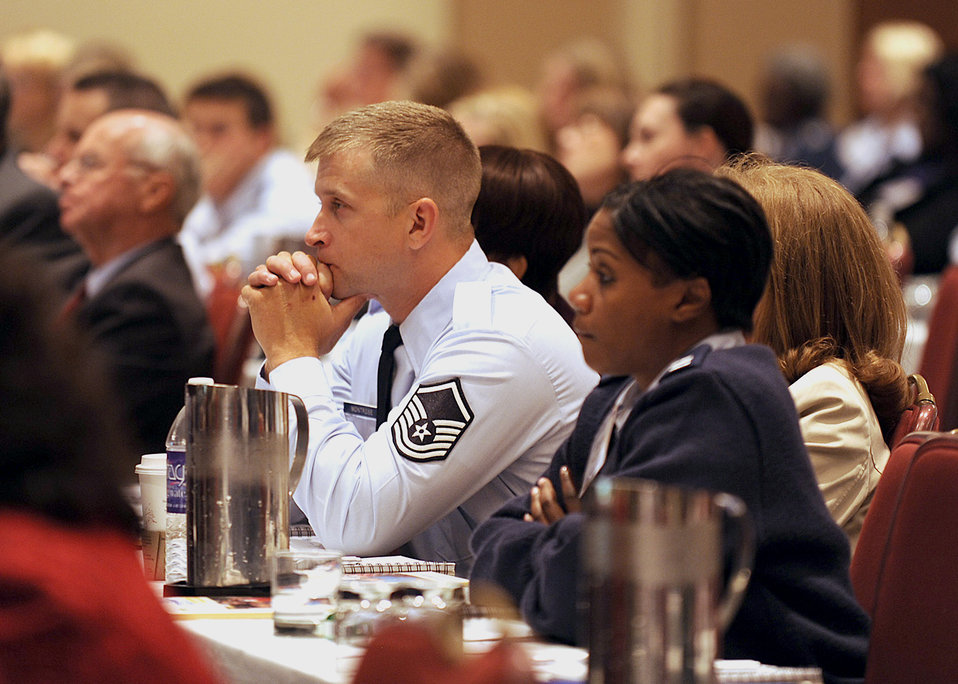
Caring for People forum

The second annual Caring for People Forum was held April 19-21 in Washington D.C. Attendees from around the Air Force participated in the conference designed to address quality of service issues for Airmen. Guest speakers included Secretary of the Air Force Michael Donley, Air Force Chief of Staff Gen. Norton Schwartz and Chief Master Sergeant of the Air Force James Roy.